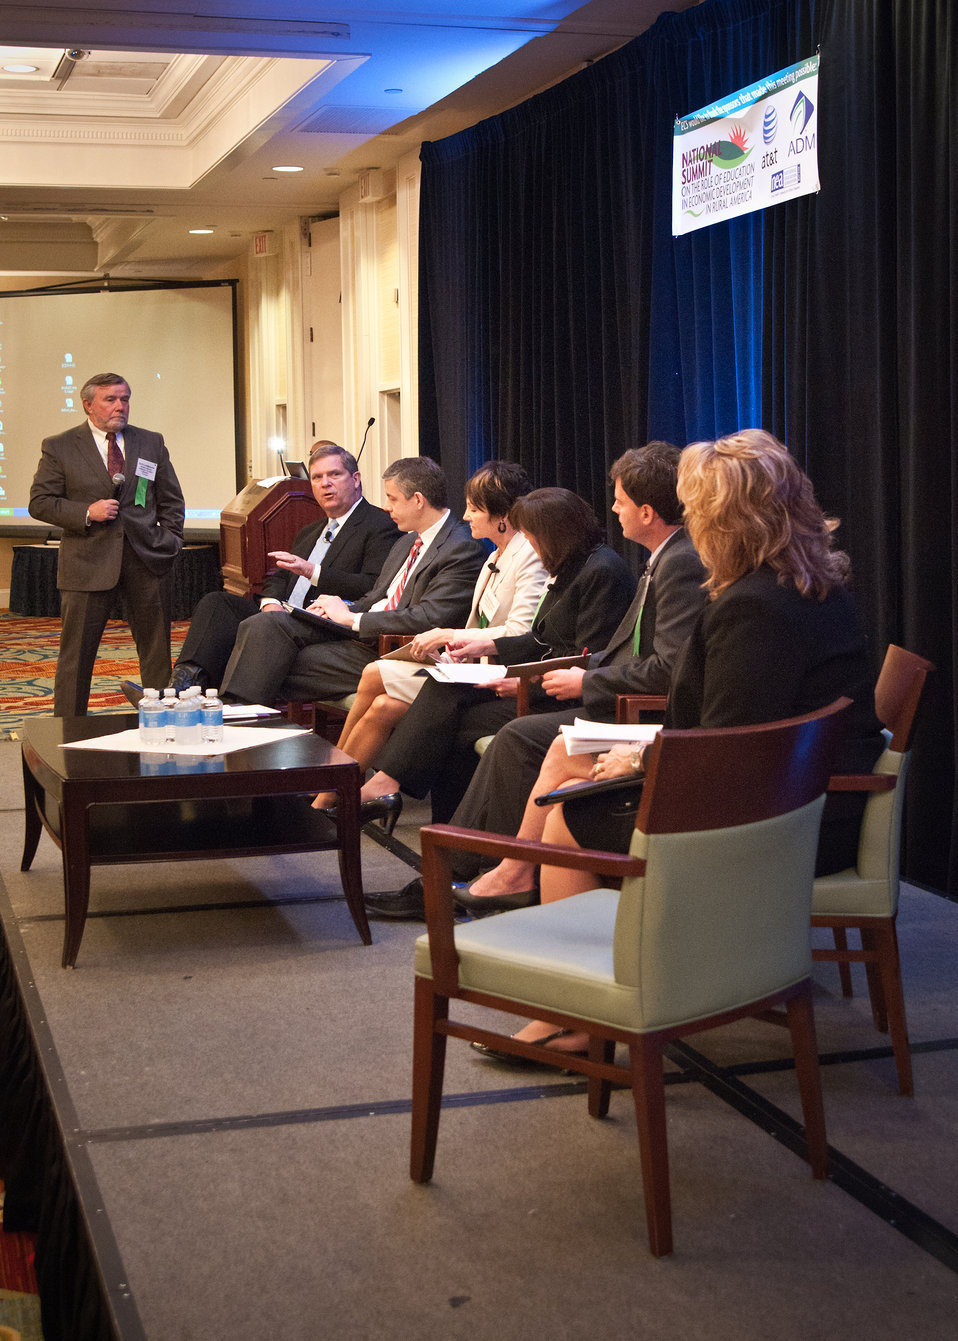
Agriculture Secretary Tom Vilsack responds to remarks by panel members at the First National Summit on Rural Education and Economic Development held by the Education Commission of the States in Washington, DC, on Wednesday, May 4, 2011. From left: David Longanecker, President, Western Interstate Commission for Higher Education, Colorado, Agriculture Secretary Tom Vilsack and Education Secretary Arne Duncan, Melody Schopp, Secretary of Education, South Dakota Department of Education, Diane DeBacker, Commissioner of Education, Kansas Department of Education, Senator Cooper Garnos, Majority Whip and Chair of the Senate Education Committee, Stephanie Tyler, President, AT&T Nevada (a sponsor of the Education Summit), Rae Ann Kelsch, Chair of the House Education Committee, North Dakota House of Representatives. Longanecker moderated the summit for the ECS. The ECS created by Congress in 1965 includes a range of education policy makers who convene and share education information to build and implement effective education policy.